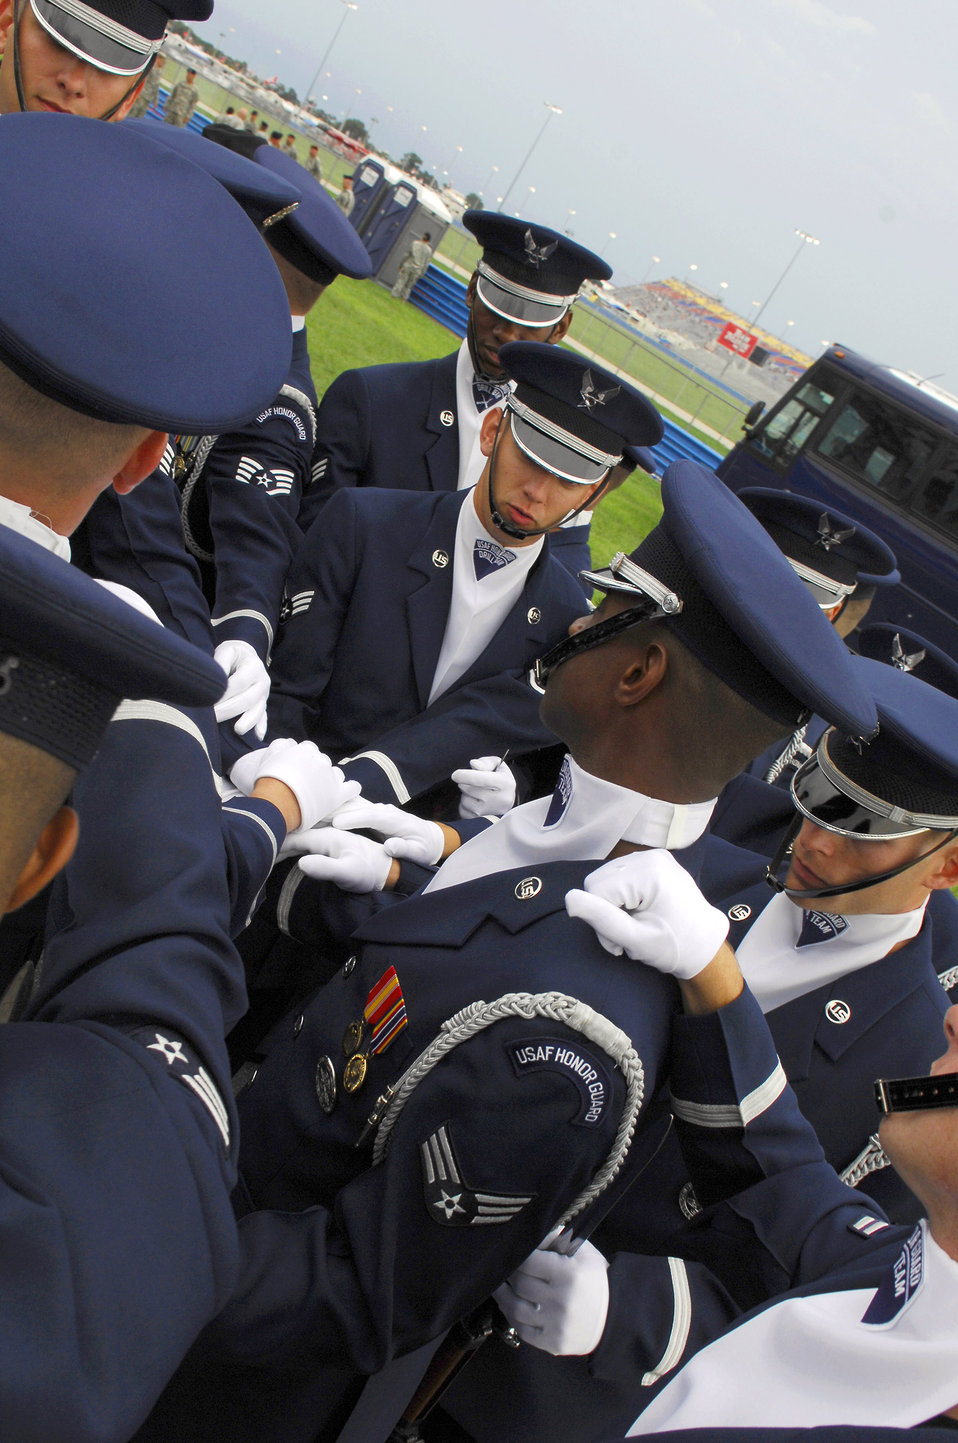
Drill team performs at NASCAR race

Members of the Air Force Drill Team prepare behind pit row before their NASCAR performance at Daytona International Speedway July 7 in Daytona, Fla. The drill team represented the Air Force during the prerace events at NASCAR's Pepsi 400. The team is the traveling component of the Air Force Honor Guard and tours Air Force bases worldwide showcasing the precision of today's Air Force to recruit, retain and inspire Airmen for the Air Force mission.